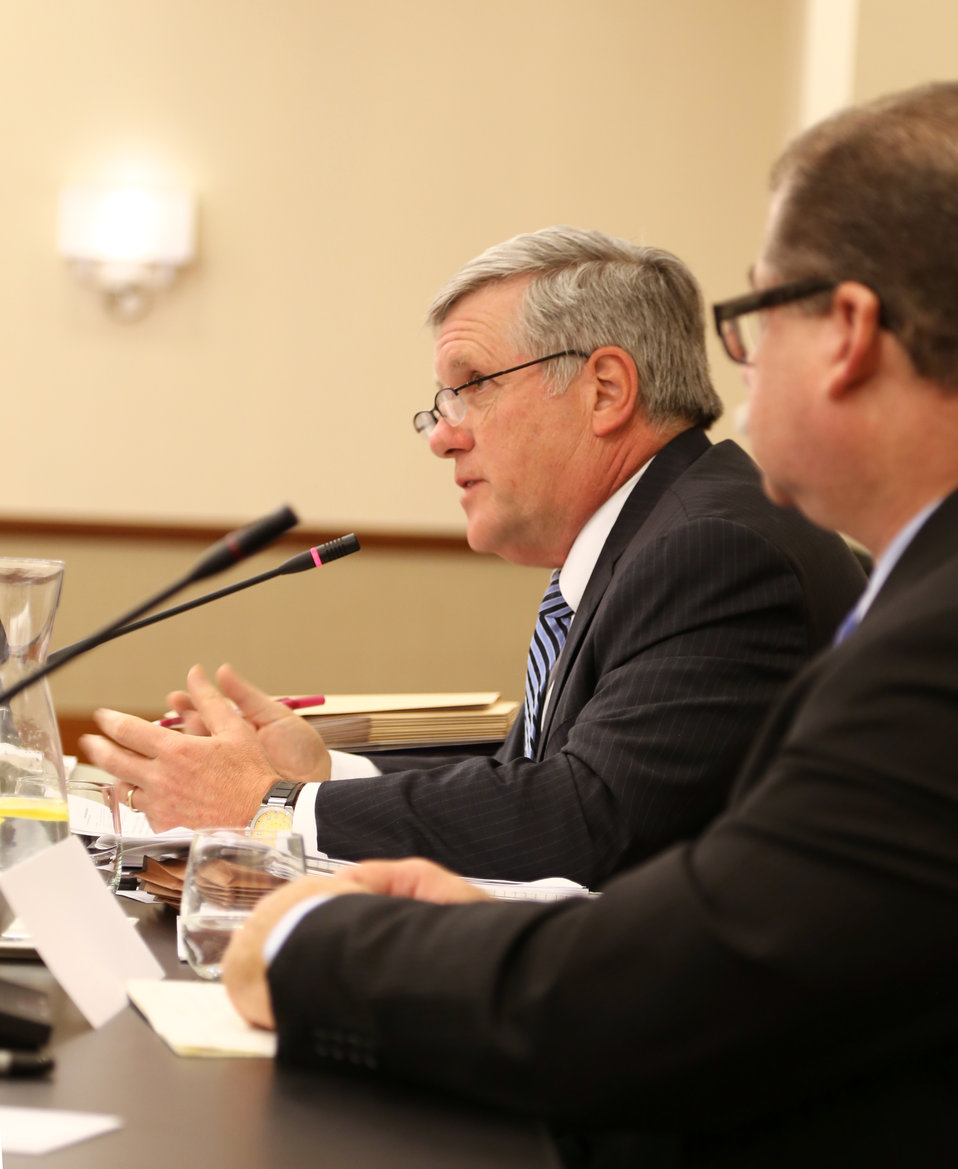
Wildlife Trafficking Advisory Council Meeting March 20, 2014